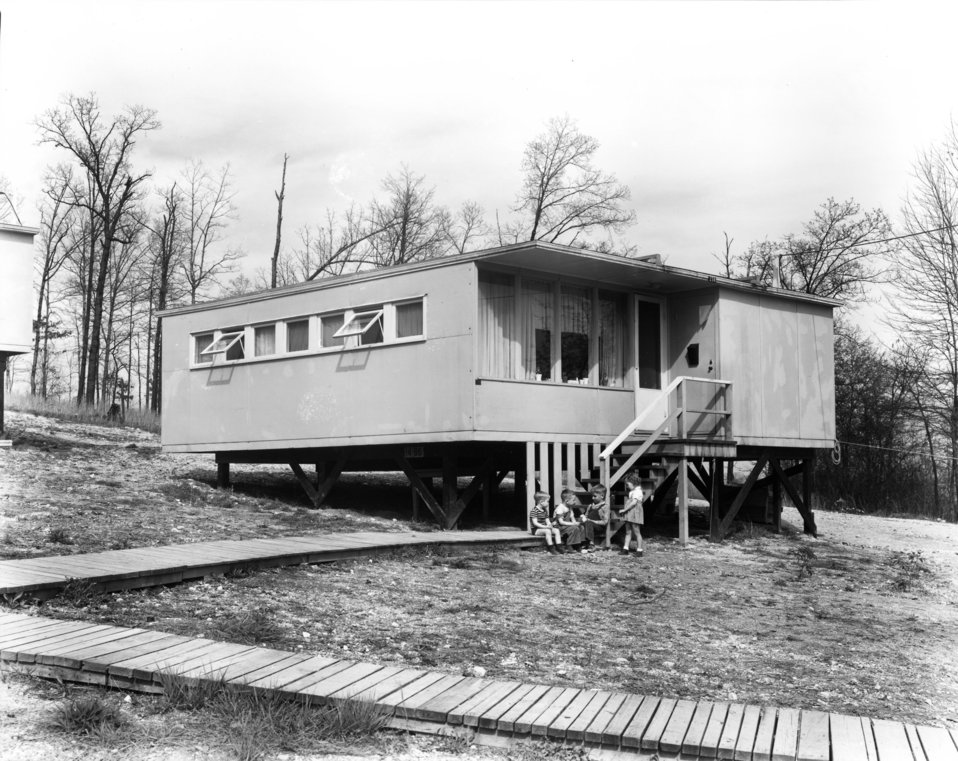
Housing at Oak Ridge